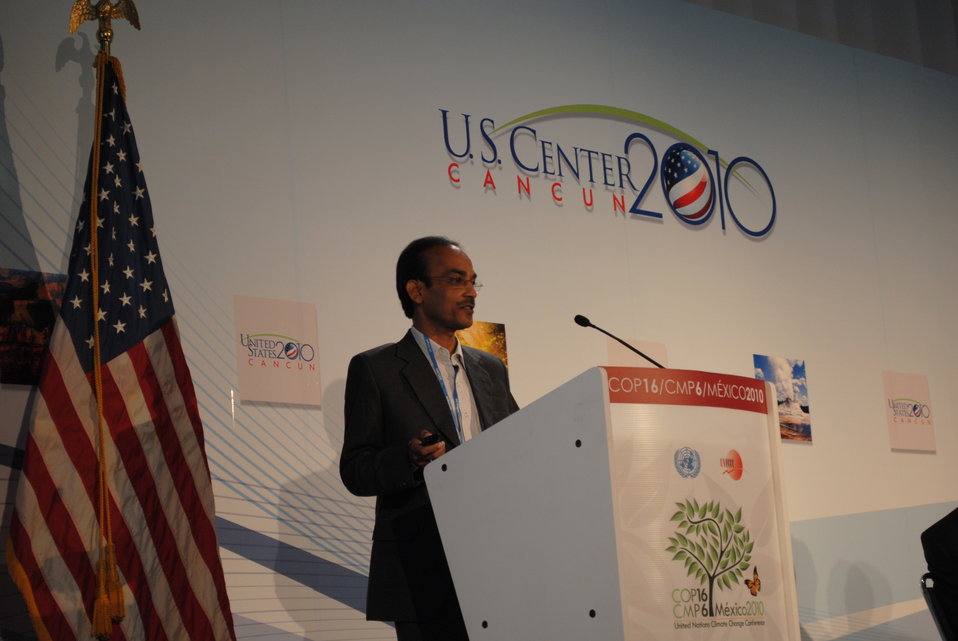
Dr. Islam Addresses the U.S. Center

Dr. Islam, a Borlaug Fellow, addresses the U.S. Center at COP-16 in Cancun, Mexico, on December 8, 2010.